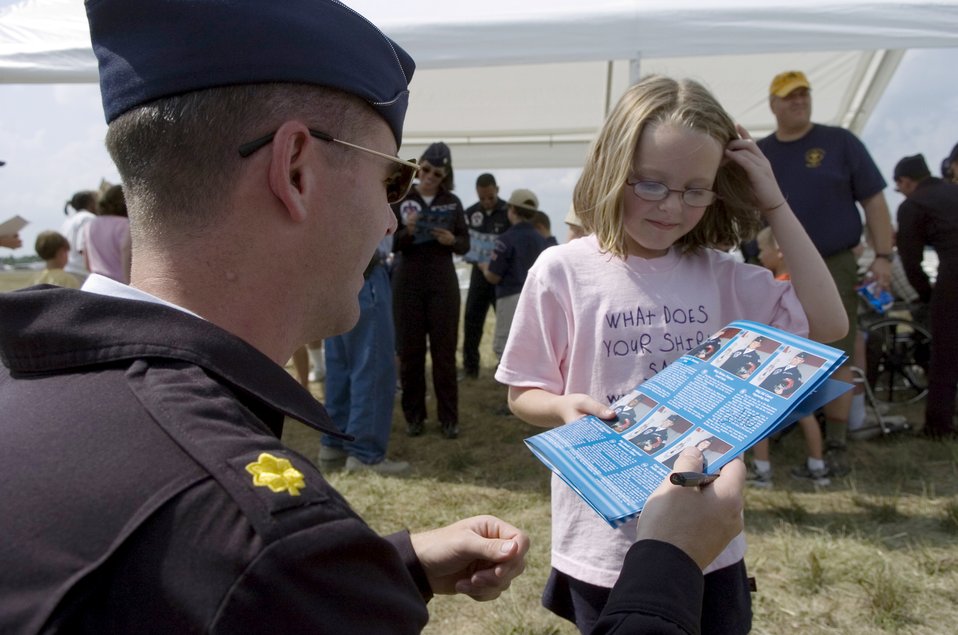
Thunderbirds

Six-year-old Ashley Cones, from Belleville, Ill., asks Thunderbird #6, Maj. Ed Casey, for an autograph at Scott Air Force Base, Ill. Major Casey is the opposing solo for the 2006 Thunderbird team.